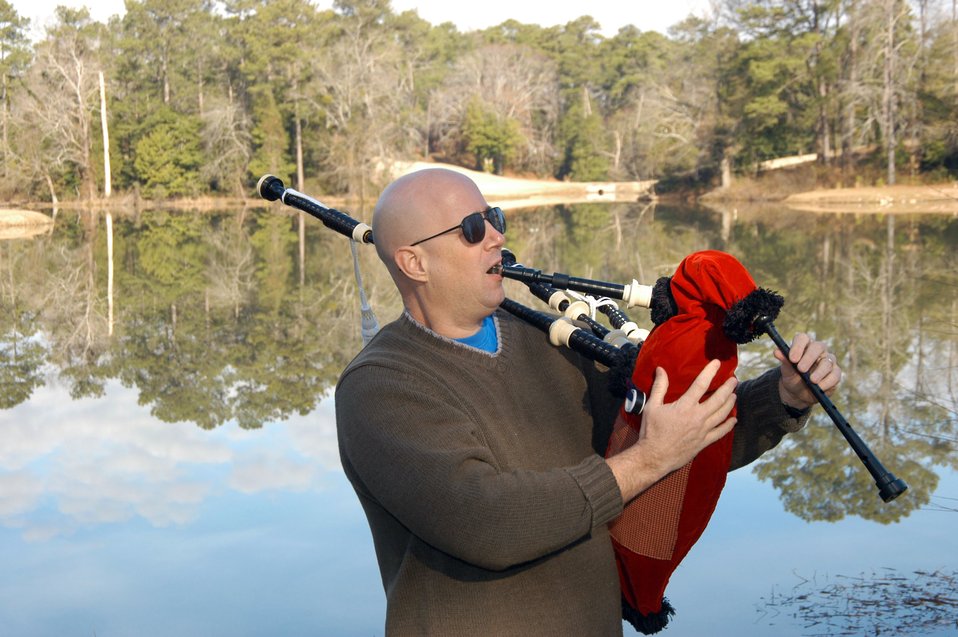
Joint Stars Airman plays bagpipes

ROBINS AIR FORCE BASE, Ga. (AFPN) -- Lt. Col. Skip Blumenthal practices playing bagpipes at least half an hour four or five days a week, usually in his backyard.